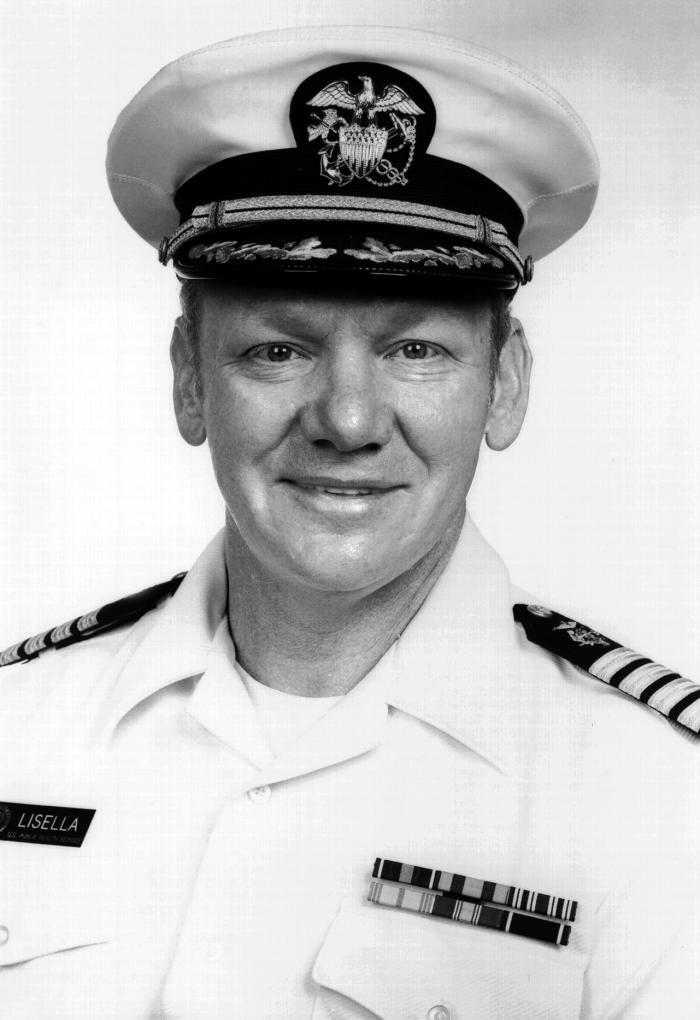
This photograph shows Public Health Service (PHS) Commissioned Corps Officer Captain Frank Lisella.